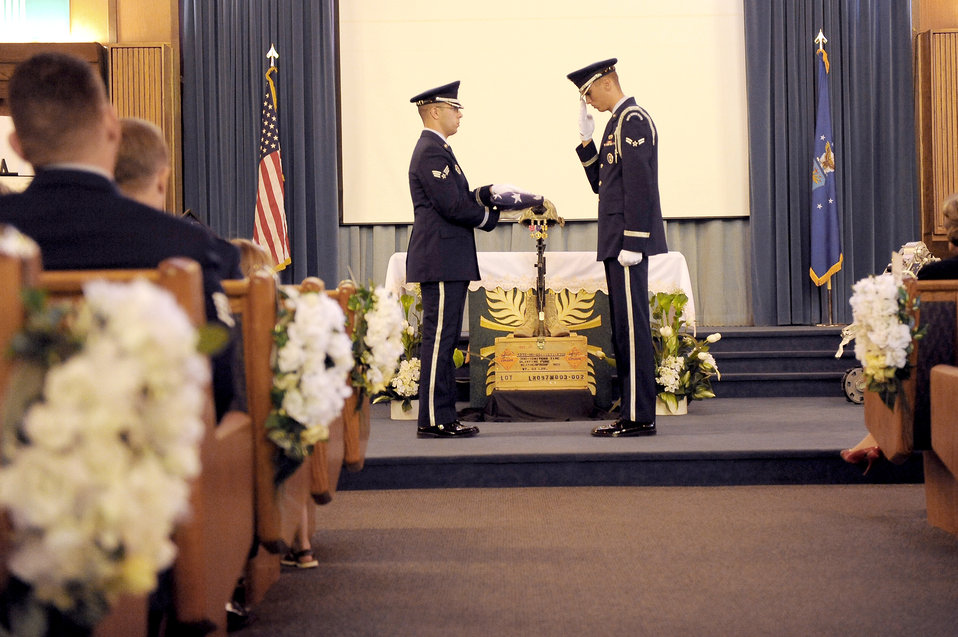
SrA Buras memorial

Nellis Air Force Base Honor Guard members perform the flag-folding ceremony inside the base chapel during a memorial service for Senior Airman Michael Buras Oct. 15, 2010, at Nellis AFB, Nev. Airman Buras was an explosive ordnance disposal journeyman assigned to the 99th Civil Engineer Squadron when he was killed in action while responding to a roadside bomb Sept. 21, 2010, in Afghanistan.